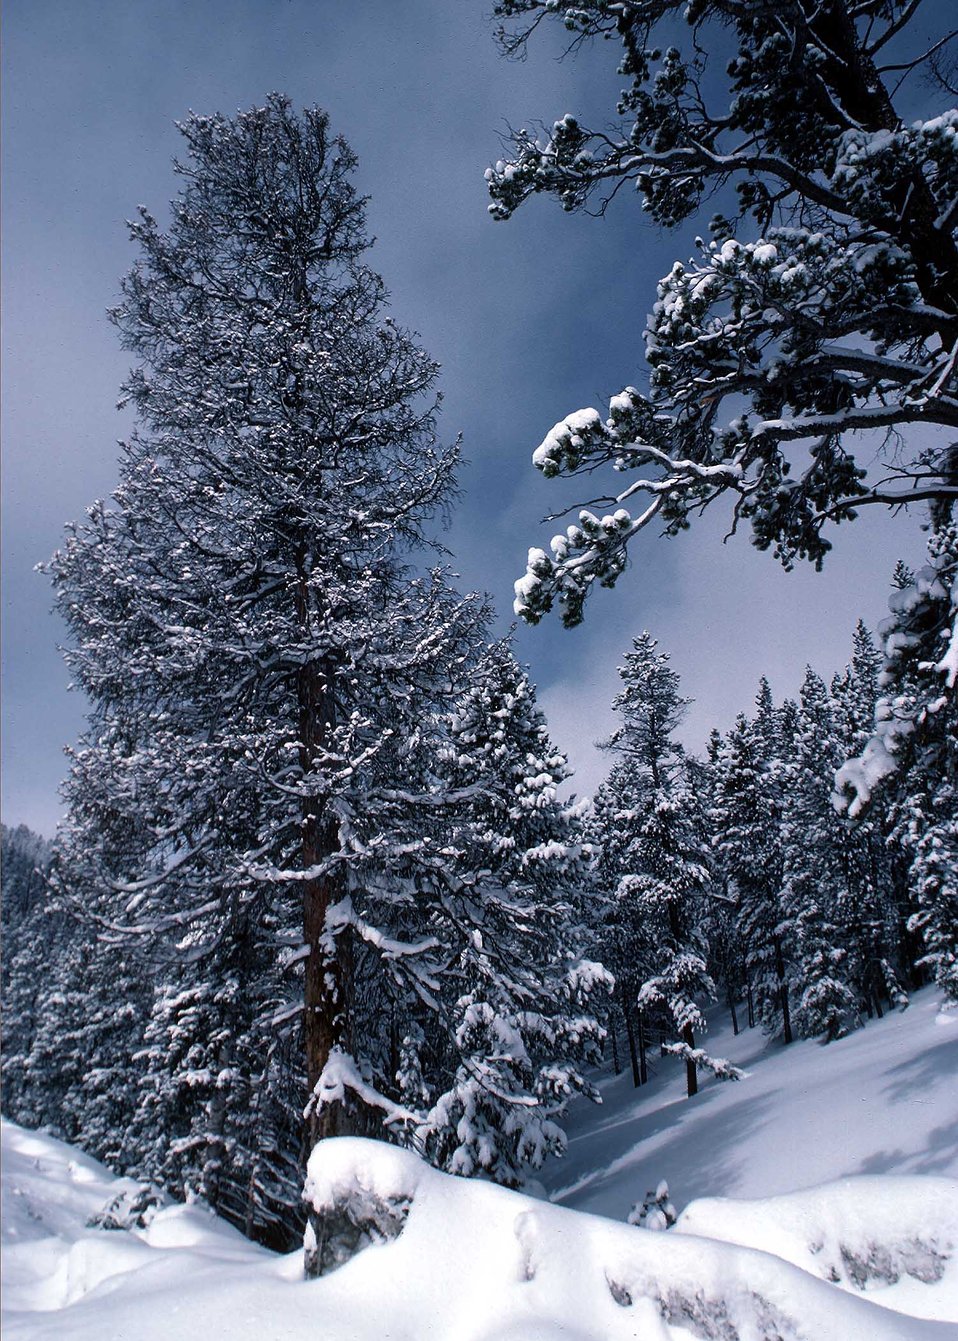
A snow covered tree. Snow builds up in Colorado's high forests. Snow melt is essential to western agriculture.